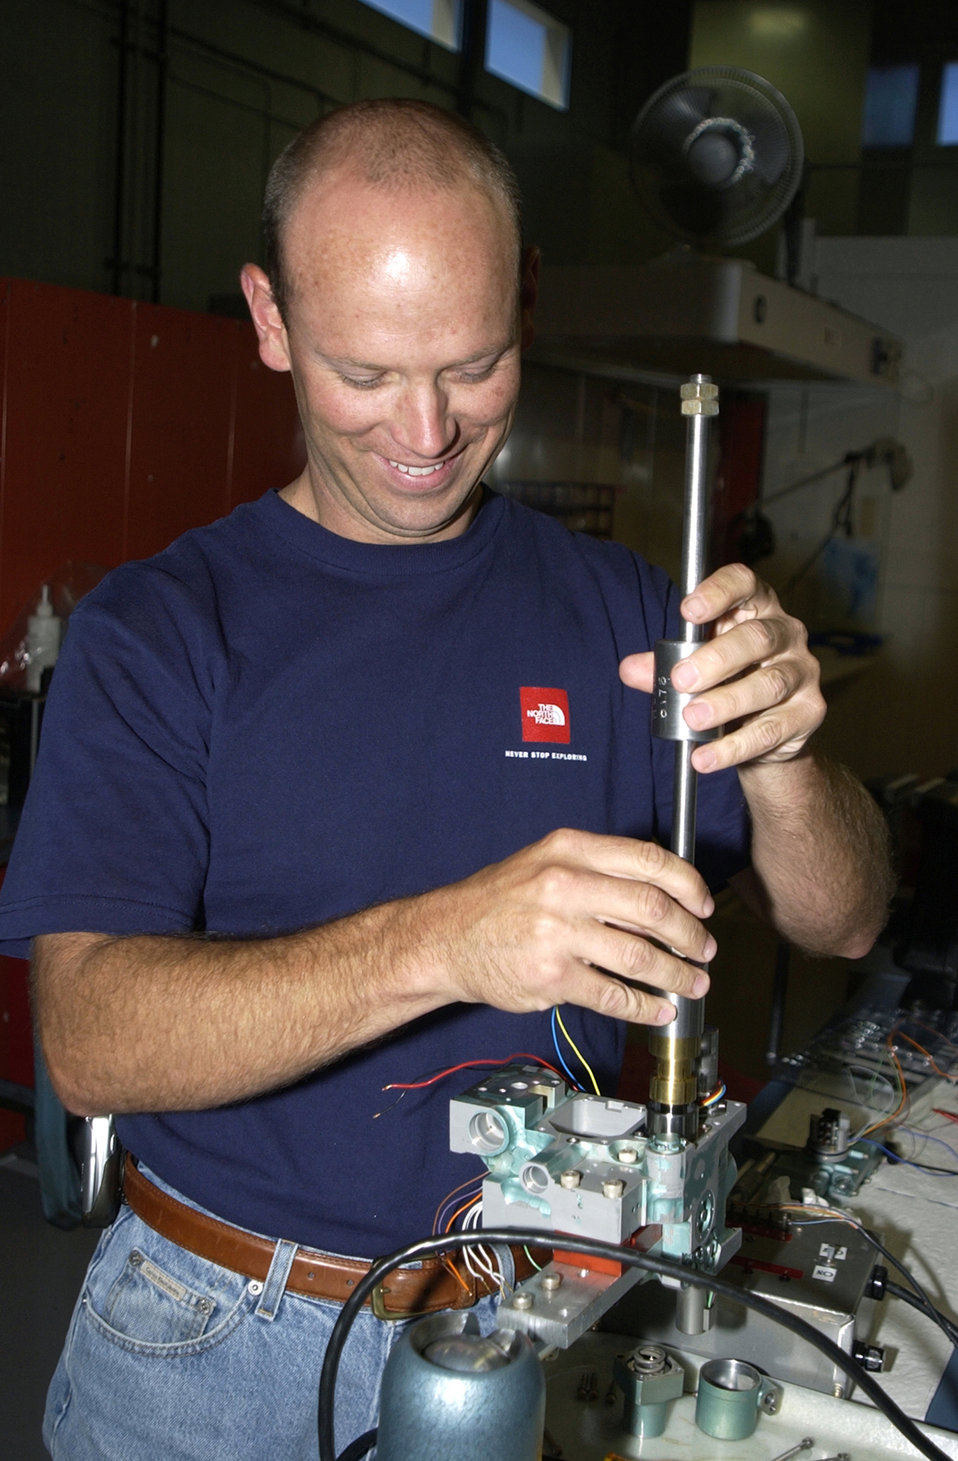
Mechanic pulls in cash with IDEA

HILL AIR FORCE BASE, Utah -- Brett Harris demonstrates the puller tool he developed that helps take F-15 Eagle pitch trim controllers apart so they can be cleaned and refurbished without damaging them. Mr. Harris' suggestion through the Innovative Development through Employee Awareness saved the Air Force $41,317 and earned him $6,200.